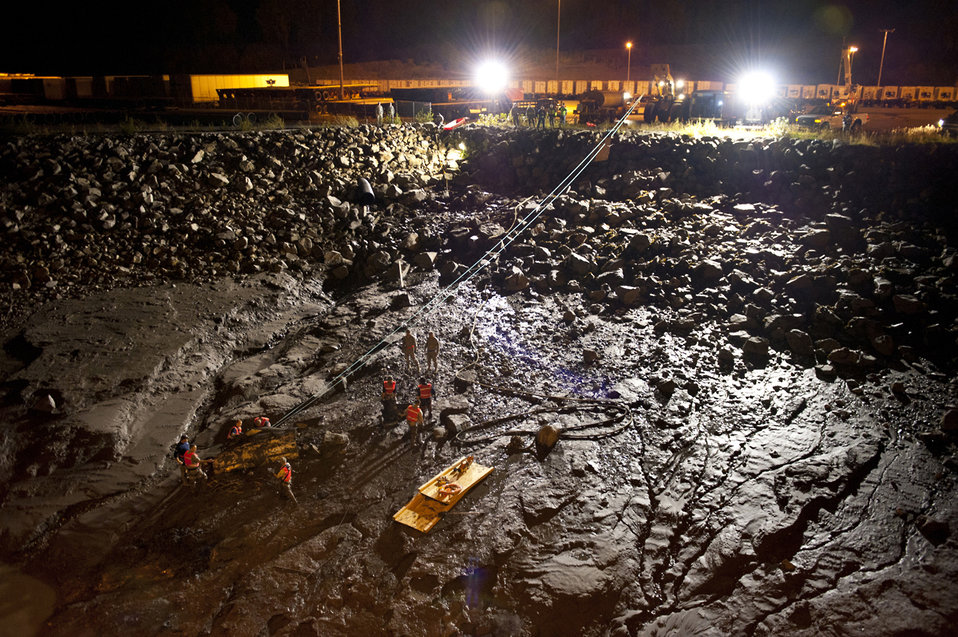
Phantom in the water

Airmen from the Joint Base Elmendorf-Richardson Crash Recovery Unit dig out an entrenched F-4 Phantom II fuel tank from the Port of Anchorage, Alaska, Sept. 18, 2012. Joint Base Elmendorf Richardson Airmen and the Port of Anchorage worked together to safely remove the external fuel tank, which was discovered earlier by Port personnel.